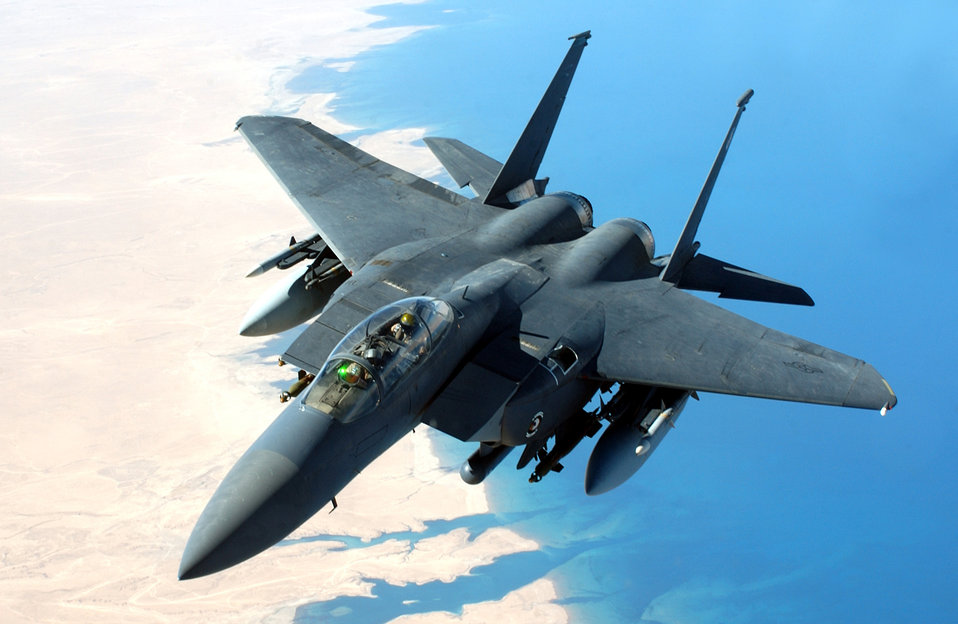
Ruling the skies

OVER IRAQ -- An F-15E Strike Eagle flies through the sky during a combat mission Aug. 16.